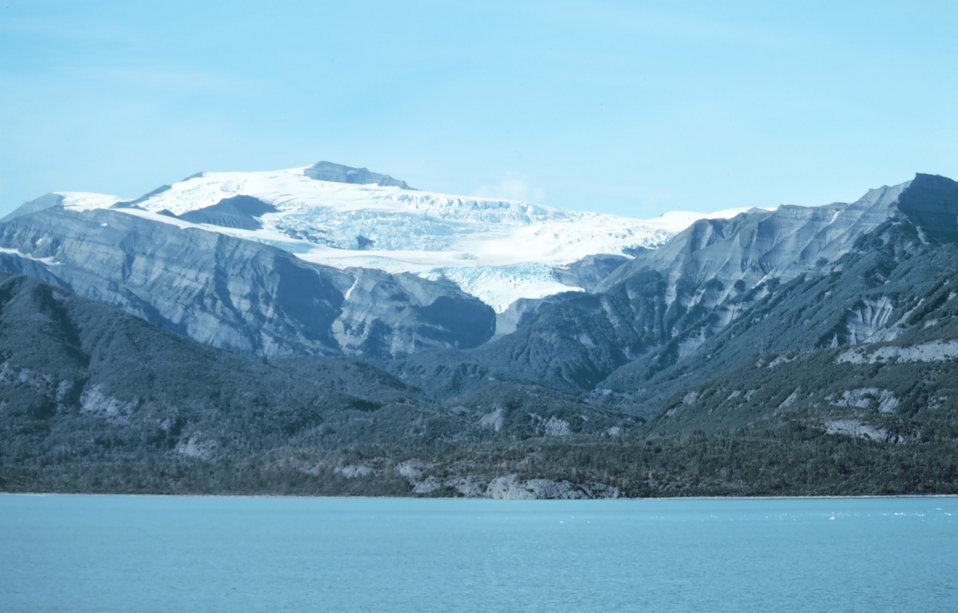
Icy Bay